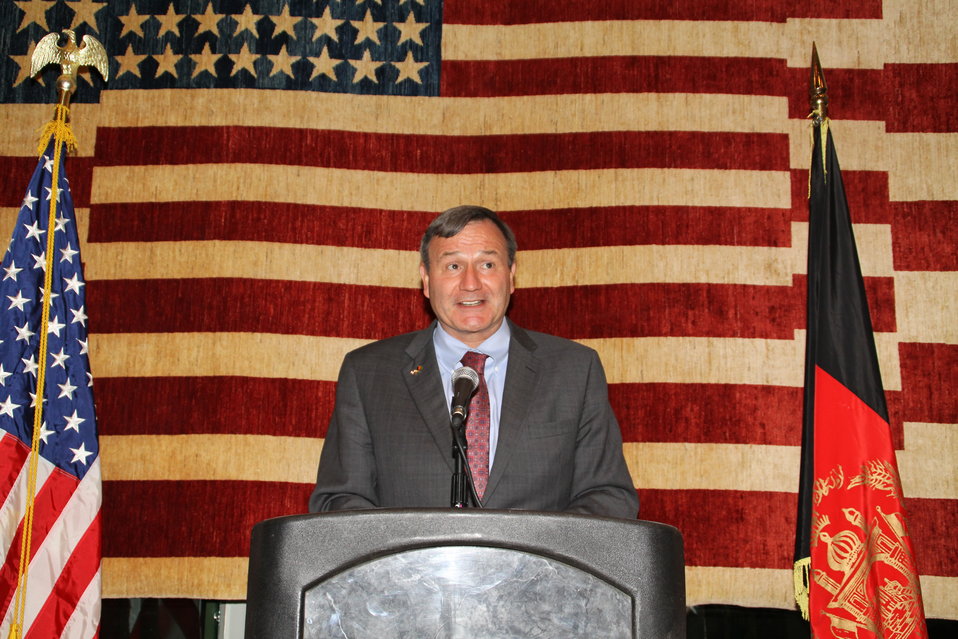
US Embassy Town Hall July 21, 2010